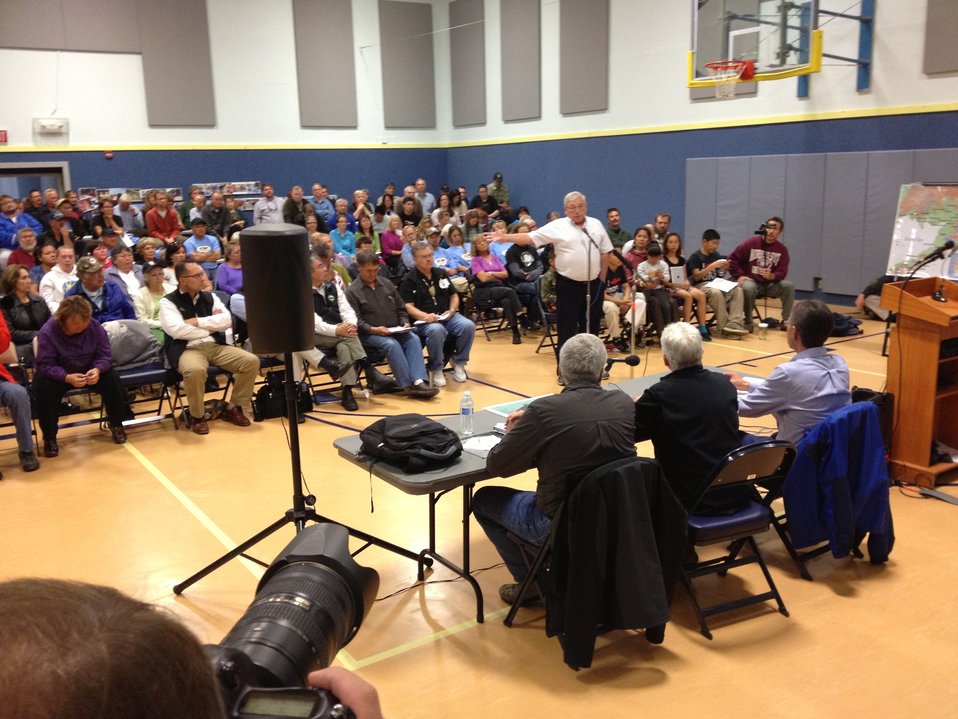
Administrator Gina McCarthy Talks with the Bristol Bay Community

On a trip to Alaska, Administrator McCarthy met with two groups of tribes and local community members who rely on the waters throughout the Bristol Bay watershed for their livelihood and way of life.